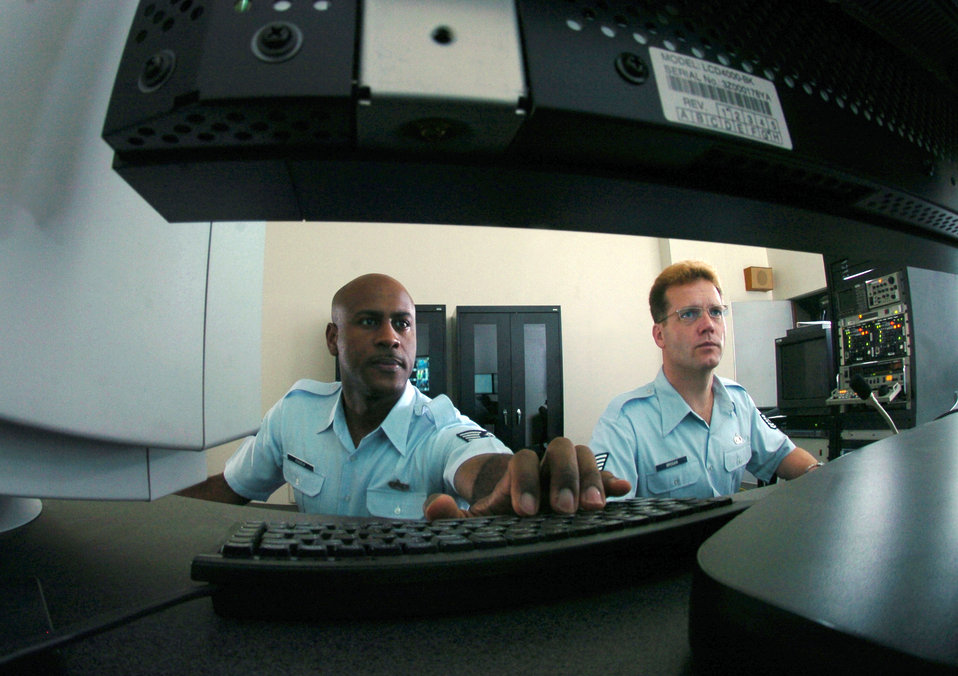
Behind the news scene

YOKOTA AIR BASE, Japan -- Staff Sgt. Norris Agnew (left) and Tech. Sgt. Michael Brogan use digital-editing equipment to prepare a nightly